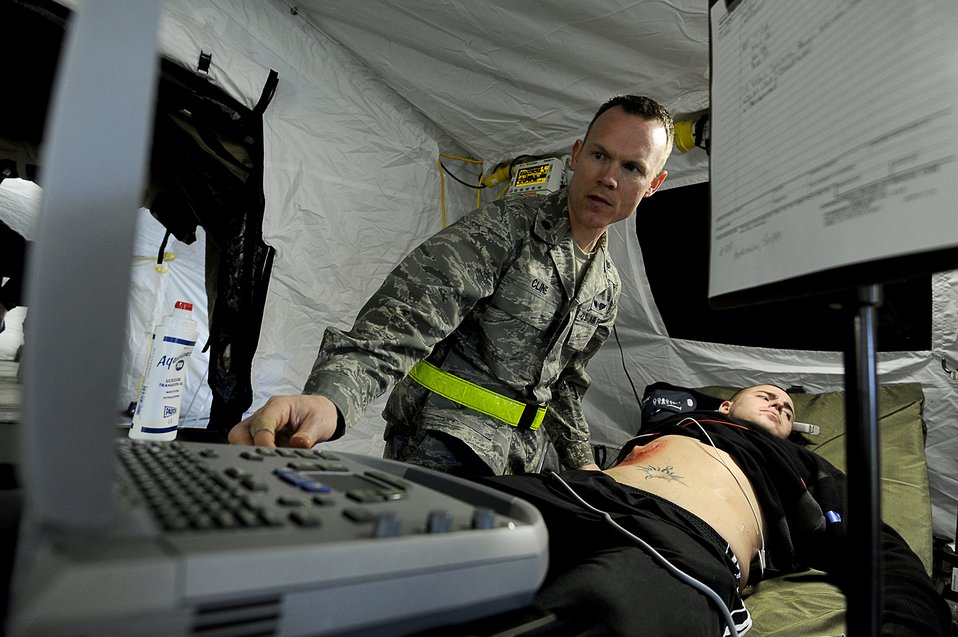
In capable hands

An Airman from the 60th Medical Group at Travis Air Force Base, Calif., provides 'medical assistance' Feb. 9, 2011, during an Air Force Expeditionary Medical Support Health Response Team exercise simulating an urban earthquake.